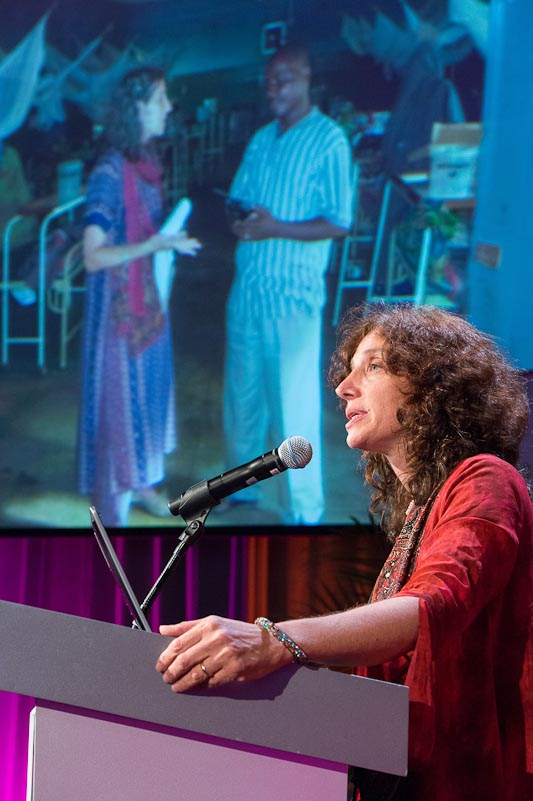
Laura Stachel

C3E Award Winner, Advancements for the Developing World